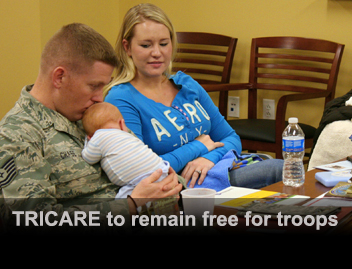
TRICARE to remain free for troops